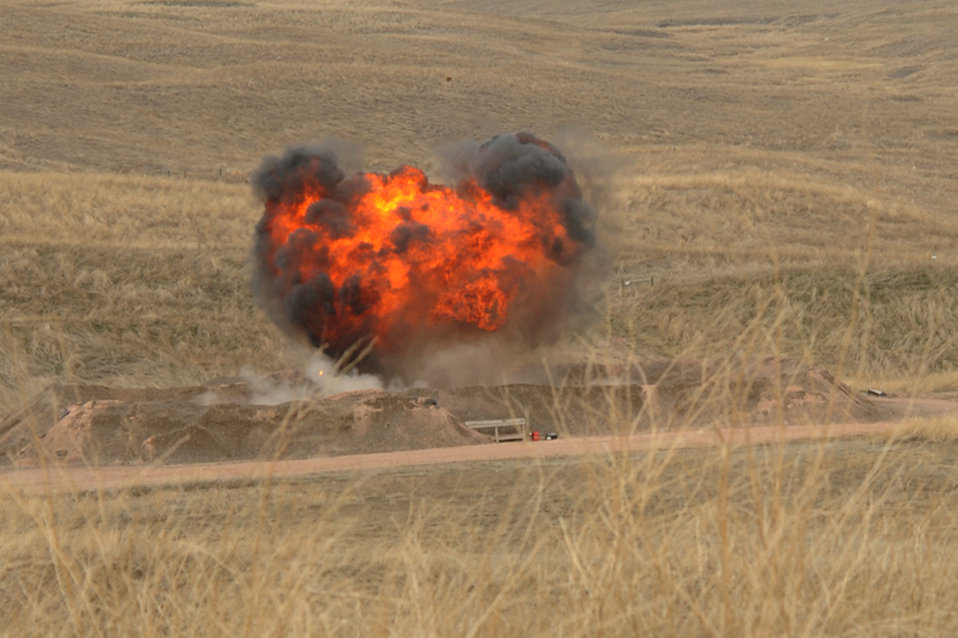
EOD team charge an explosion

The explosive ordnance disposal team from the 28th Civil Engineer Squadron set off a shaped charge to explode at Ellsworth Air Force Base, S.D., March 30, 2010.